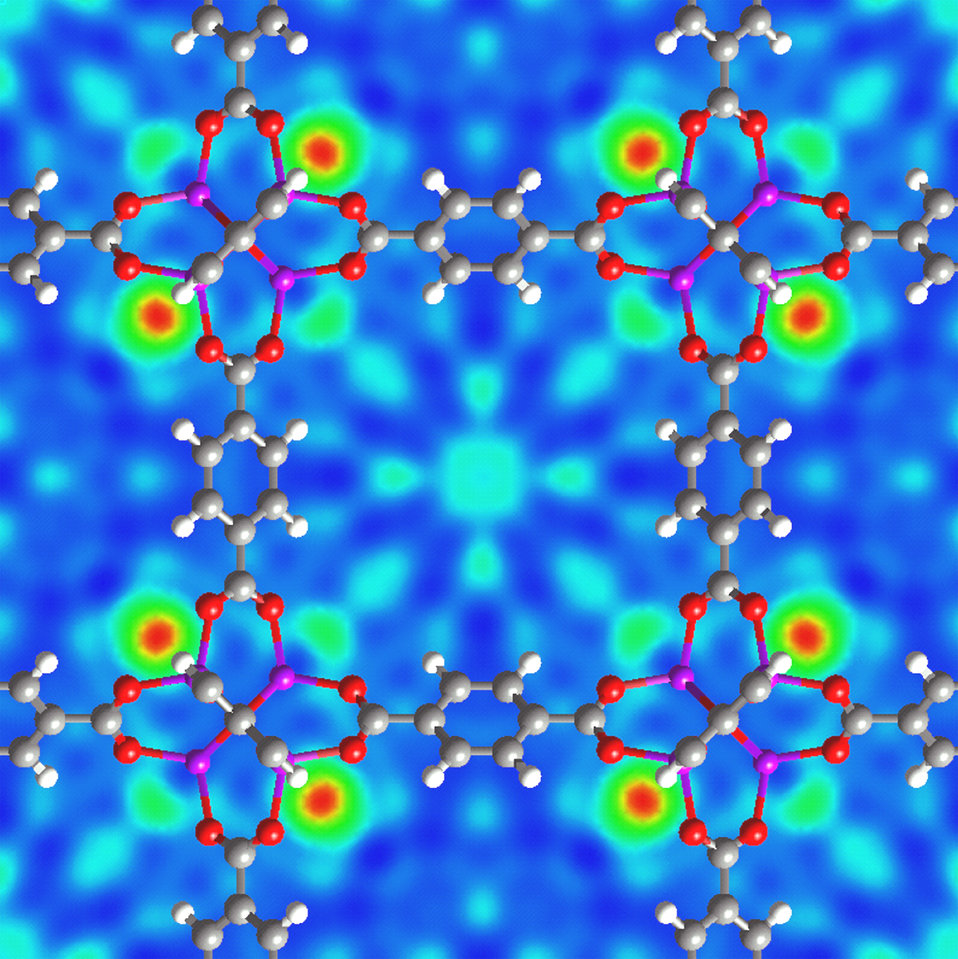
Metal Organic Framework (MOF)

Neutron-scattering image reveals where hydrogen molecules (red-green circles) connect to a metal organic framework (MOF), a type of custom-made compound eyed for hydrogen storage applications. The ball-and-stick model of the MOF is superimposed on the neutron image.